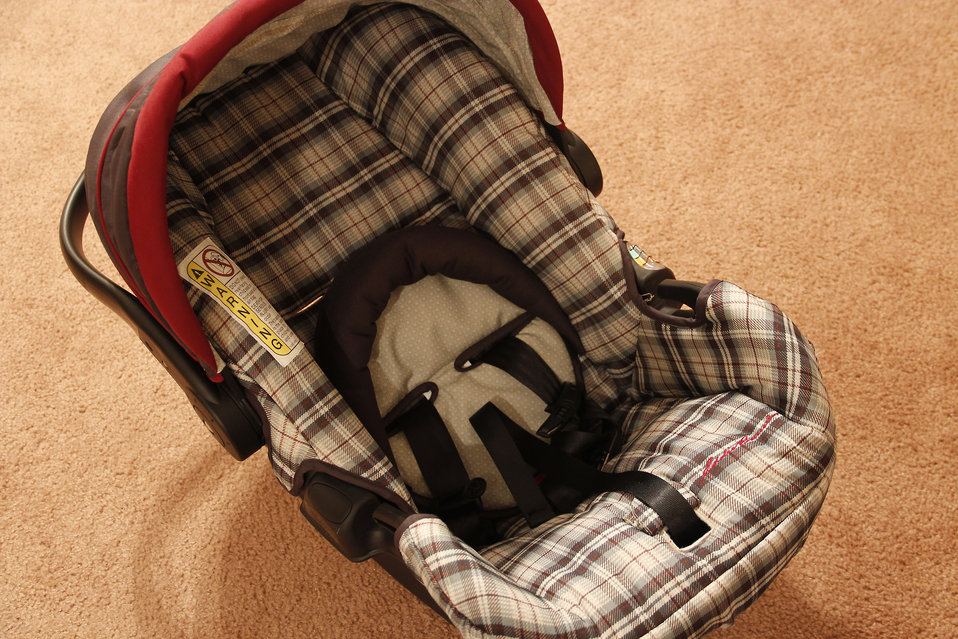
This image shows a baby car seat photographed from a raised anterior viewpoint, thereby, revealing the seat's interior details where an infant would be safely secured before embarking on any vehicular traveling.